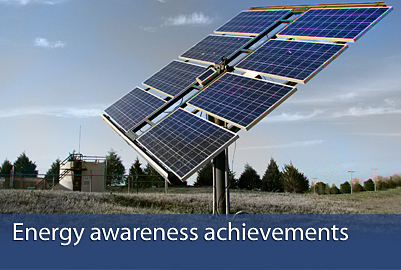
Energy awareness

During